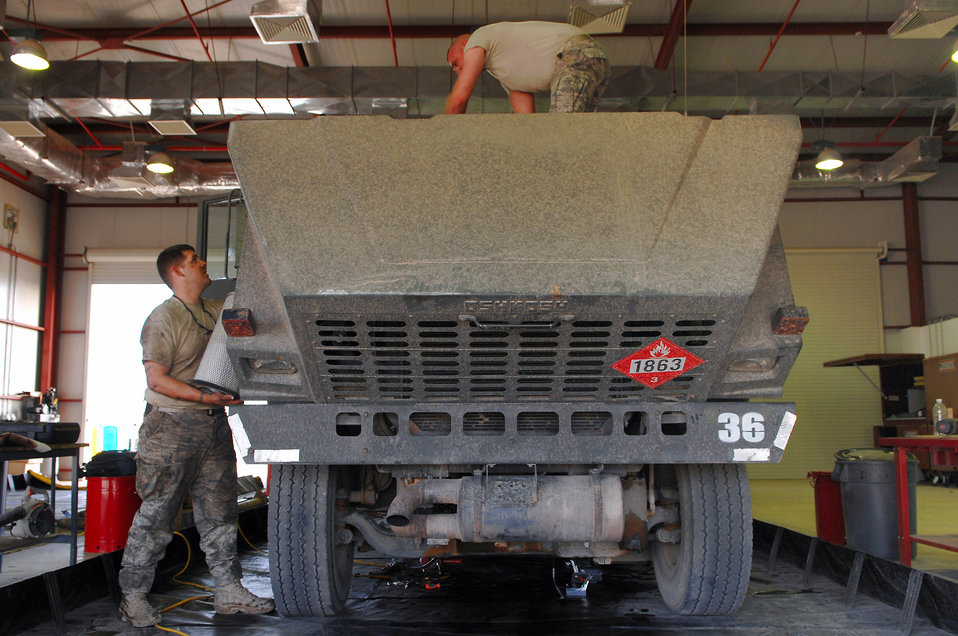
Keeping them rolling

Staff Sgt. Alex Blackburn and Staff Sgt. Jason Jablonowski replace the air filter and the reinstall the clearance lights on a refueling truck March 8 at Balad Air Base, Iraq. Sergeant Blackburn is deployed from F.E. Warren Air Force Base, Wyo. and Sergeant Jablonowski is deployed from Luke AFB, Ariz. Both are 332nd Expeditionary Logistics Readiness Squadron refueling truck mechanics.